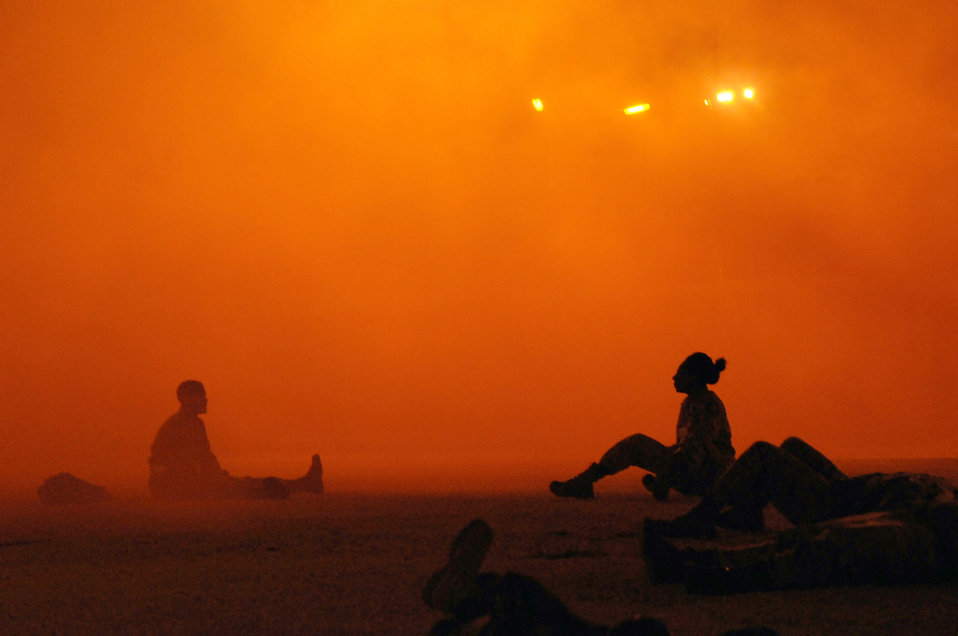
Incirlik's anti-terrorism exercise